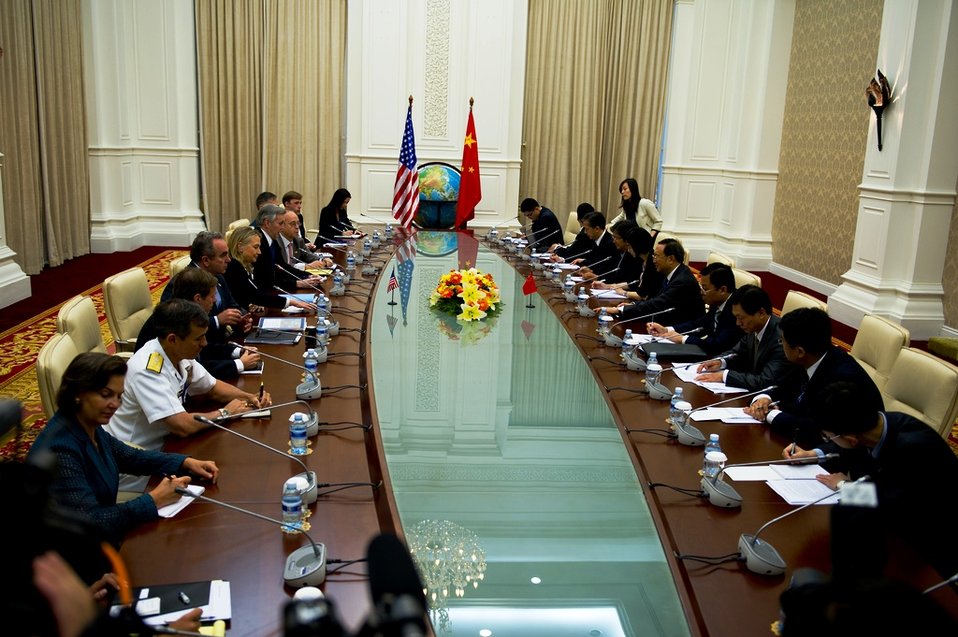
Secretary Clinton Meets With Chinese Foreign Minister Yang

U.S. Secretary of State Hillary Rodham Clinton meets with Chinese Foreign Minister Yang Jiechi in Phnom Penh, Cambodia, on July 12, 2012.